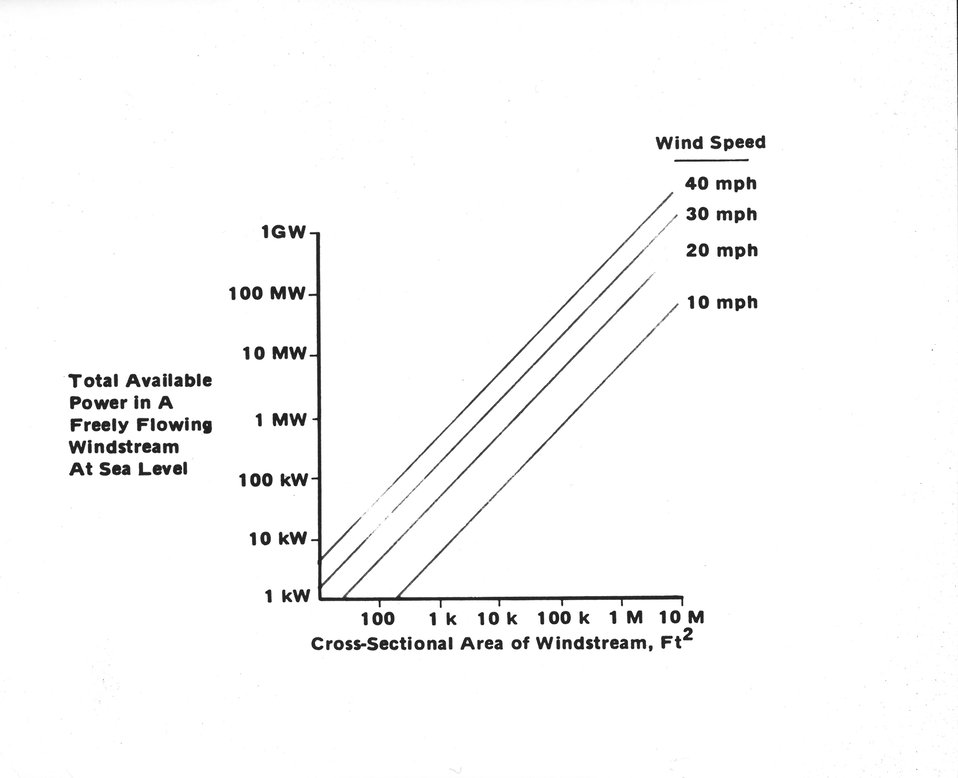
If the space covered by rotating blades of a large wind machine can be thought of as a cross-sectional area of wind-stream, it can be seen that as the size of the area increases and the wind speed increases, there is more available power in the wind. c. 1977